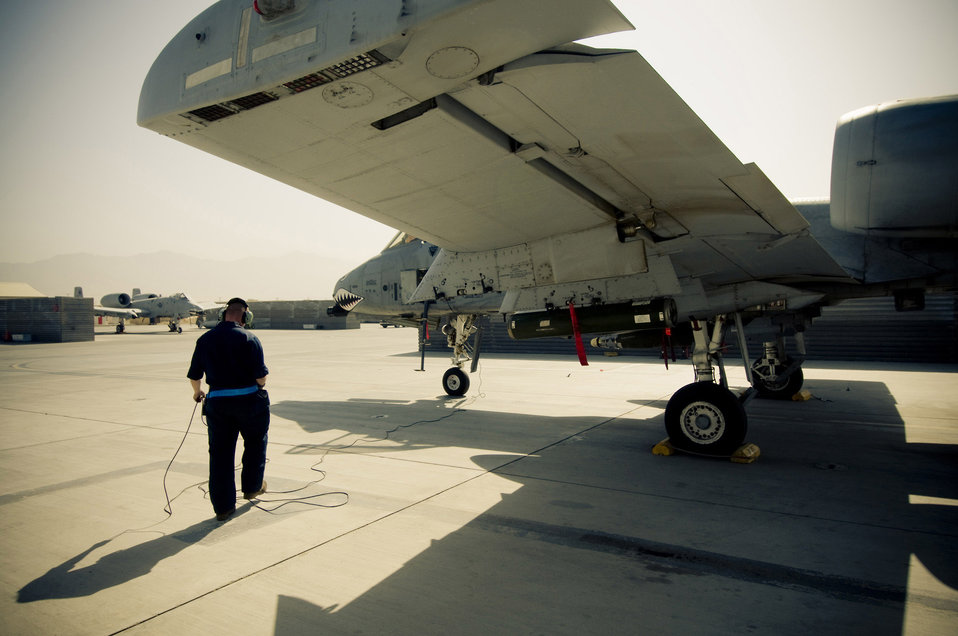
Ready to go

Senior Airman Benjamin Connery waits for the pilot to get set in his cockpit to begin to power-up an A-10 Thunderbolt II Oct. 18 at Bagram Airfield, Afghanistan. Airman Connery is a 455th Expeditionary Aircraft Maintenance Squadron A-10 crew chief and deployed from Moody Air Force Base, Ga. He is from Cashmere, Wash.